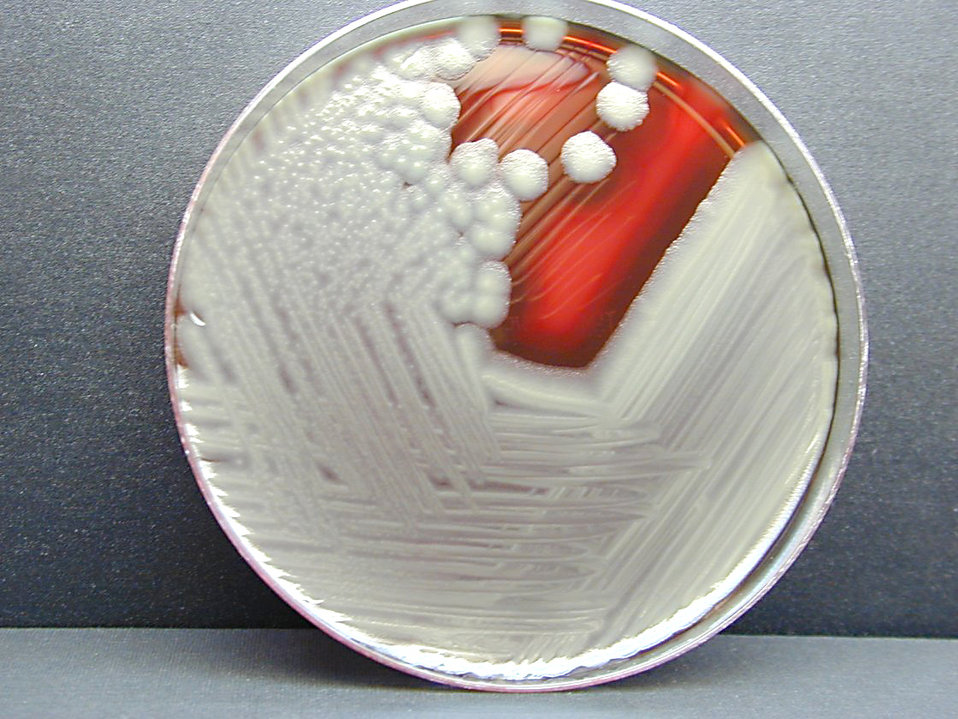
Bacillus cereus showing hemolysis on sheep blood agar.